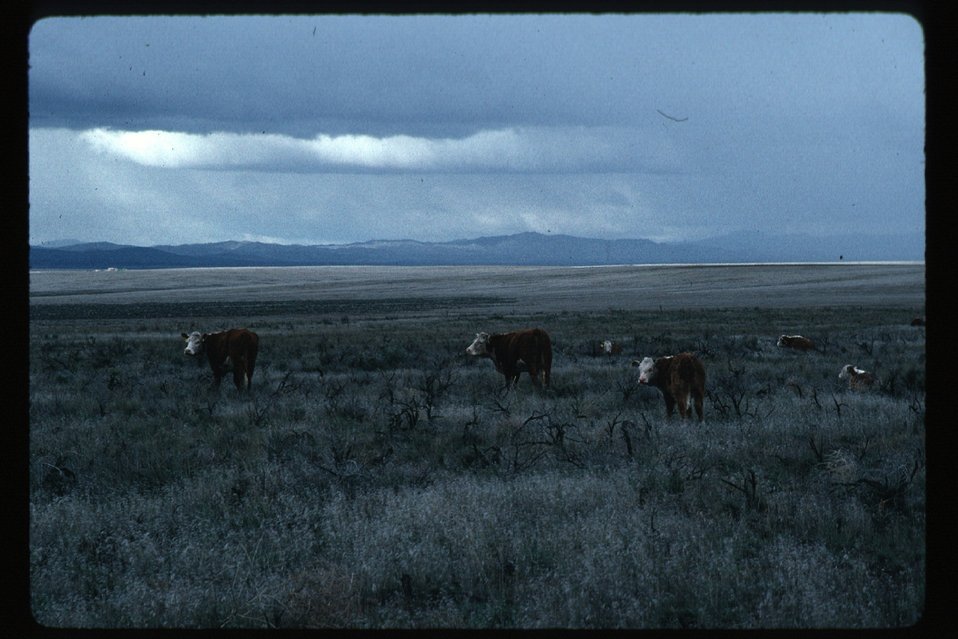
Cows Rangeland Four Rivers Field Office LSRD Lower Snake River District